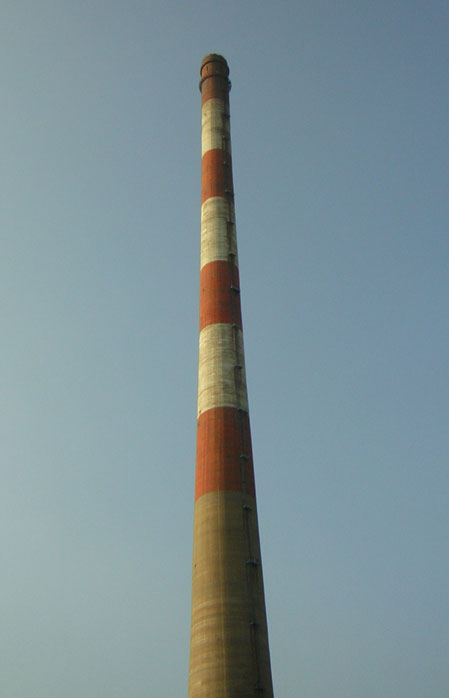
Chimney of Ugljevik Power Plant, 310 m tall, tallest structure in Bosnia. Category:Images of Republika Srpska Category:Ugljevik